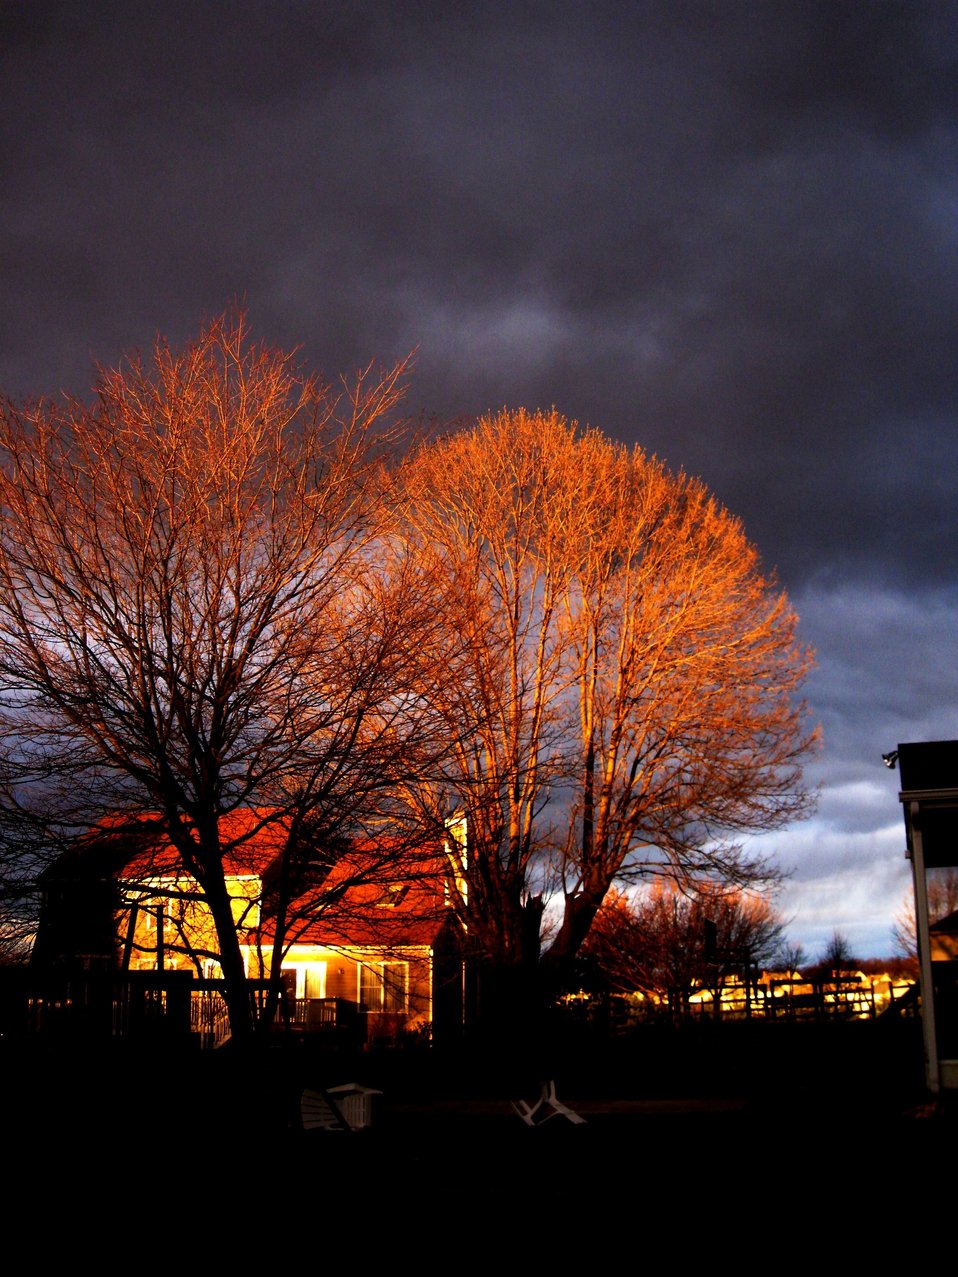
Trees high-lighted by break in clouds at sunset. Compare to image wea03810 for indication of visibility during blizzard of February 9-10 2010. Note houses seen behind trees in this image.